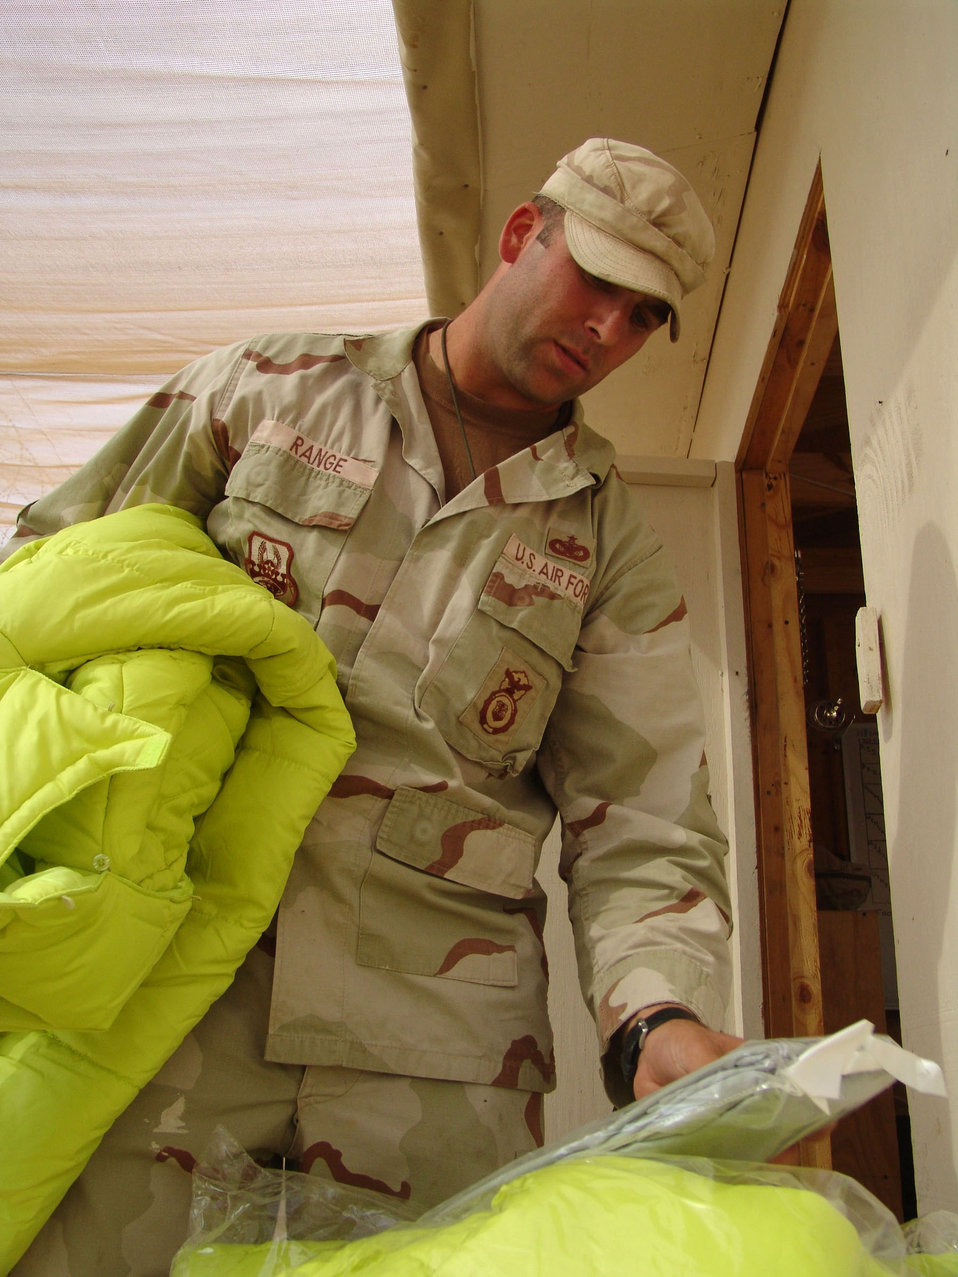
Operation Iraqi Freedom

CAMP BUCCA, Iraq (AFPN) -- Staff Sgt. Kevin Range, a 586th Expeditionary Security Forces Squadron security forces member, sorts winter jackets for detainees in the theater internment facility. The 586th ESFS provides base and area security and convoy escorts here.